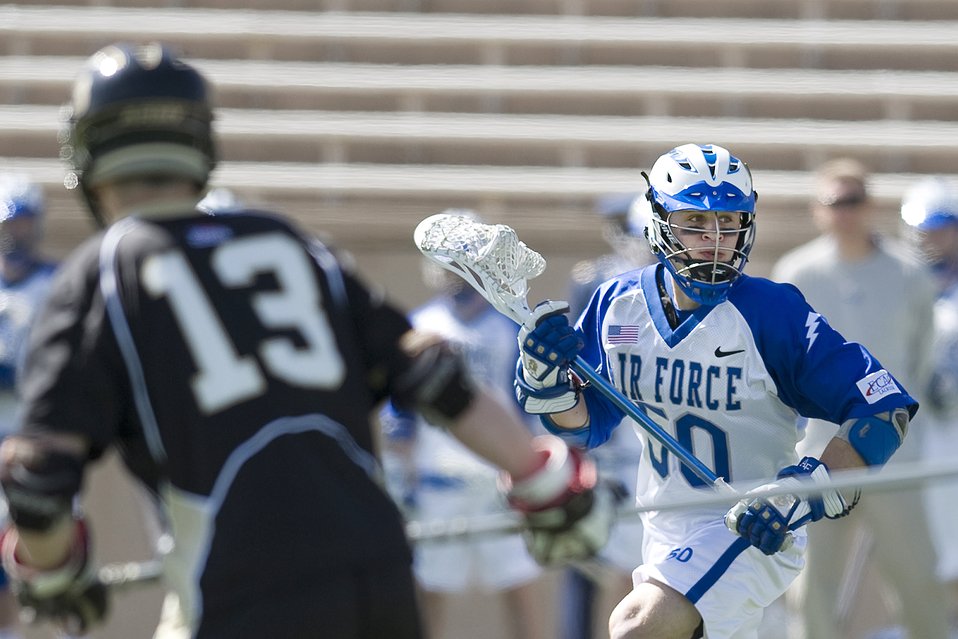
Lacrosse: Falcons defeat Black Knights

Falcon junior Vinny Sandtorv scans the field in search of an opening during the March 13, 2010, lacrosse game held at the U.S. Air Force Academy's Falcon Stadium in Colorado. Sandtory is a captain on the team. The Falcons defeated the Black Knights 8-7 in overtime.